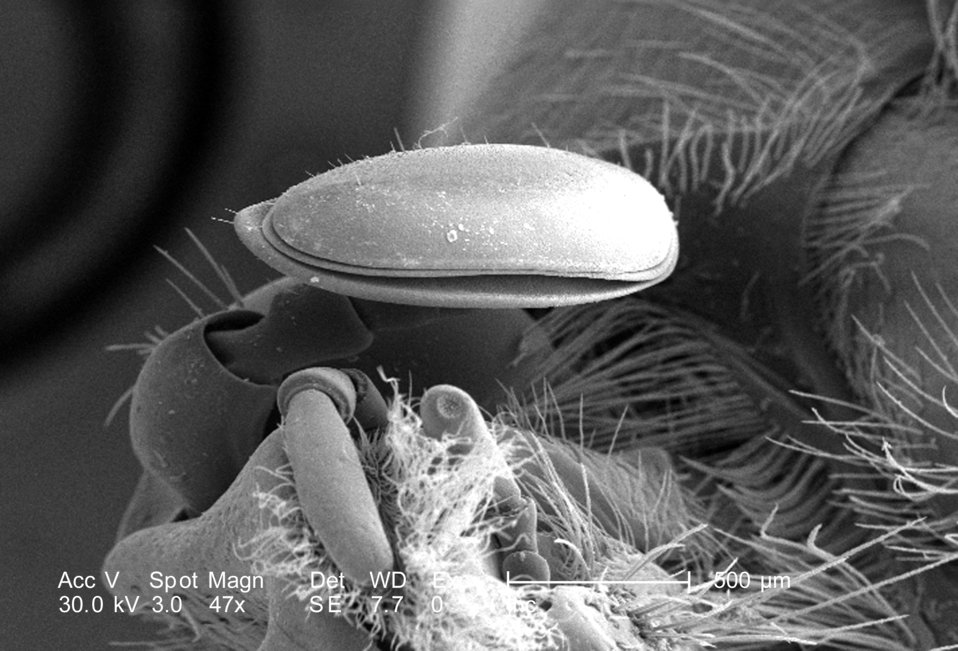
Magnified 47X, approximately one eighth that of PHIL 9938, this scanning electron micrograph (SEM) revealed morphologic details found at the distal tip of this adult 'figeater' beetle's, Cotinis mutabilis, antenna. Known as a 'lamellate' type of antennae, the distal three sensorial segments have been folded over one another, which can be seen here in this image. This morphology is typically found in members of the family Scarabaeidae.The antennae provide the insect with data indicative of changes encountered in its environment such as chemical, thermal, and tactile queues.